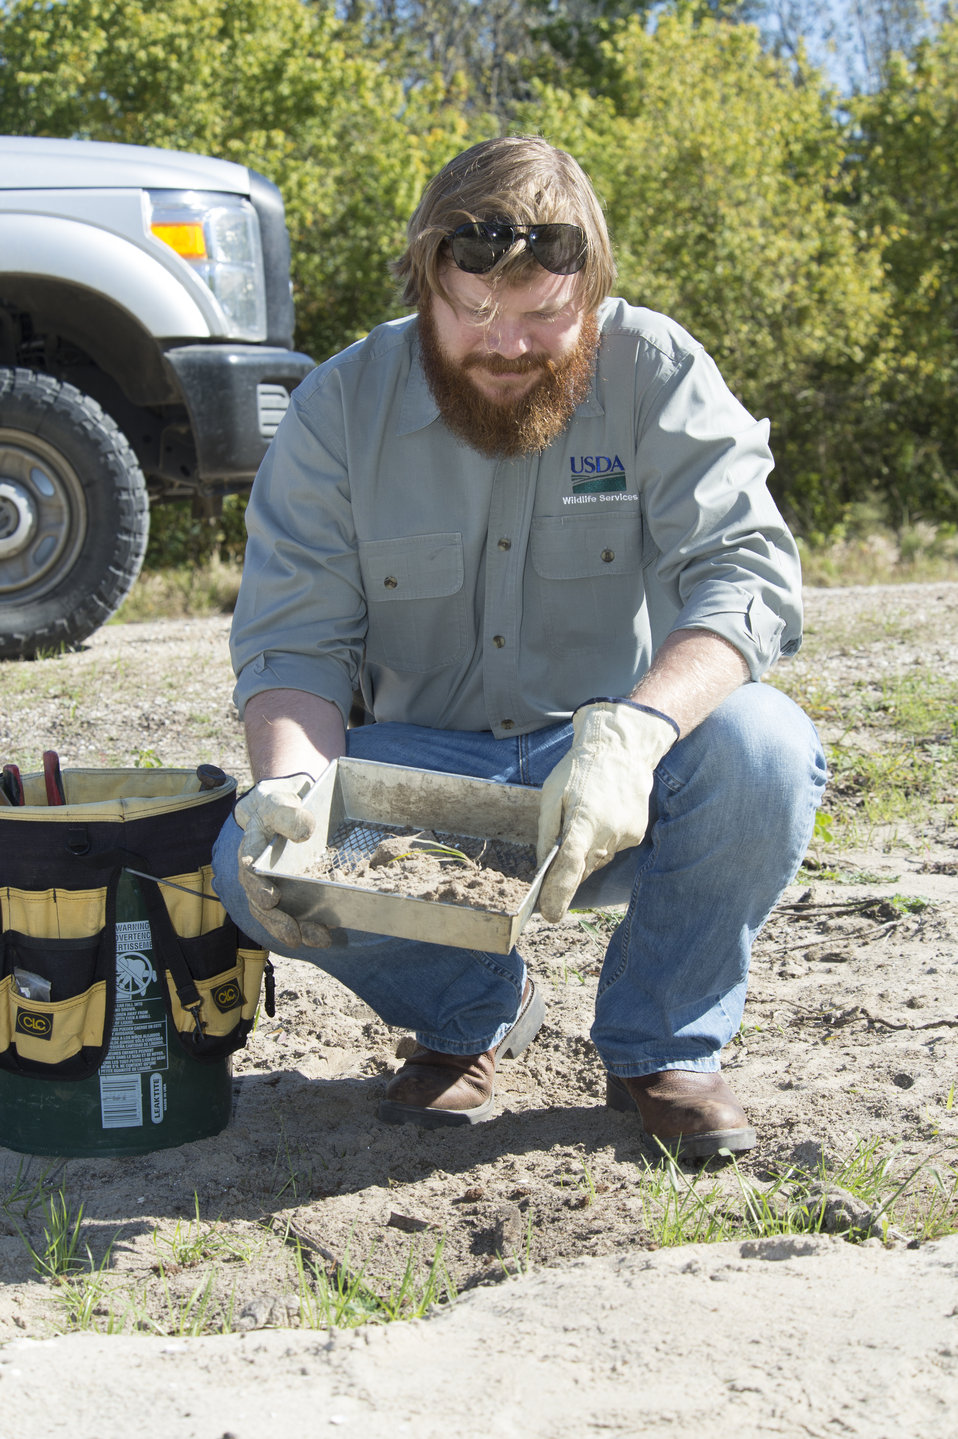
The U.S. Department of Agriculture’s (USDA) Animal and Plant Health Inspection Service (APHIS) Wildlife Services (WS) assists with the humane removal of animals from the Naval Air Station Joint Reserve Base in Belle Chase, LA on Wednesday, Nov. 20, 2013. Animals that wander onto the airstrip are dangerous to aircraft on take off and landing.